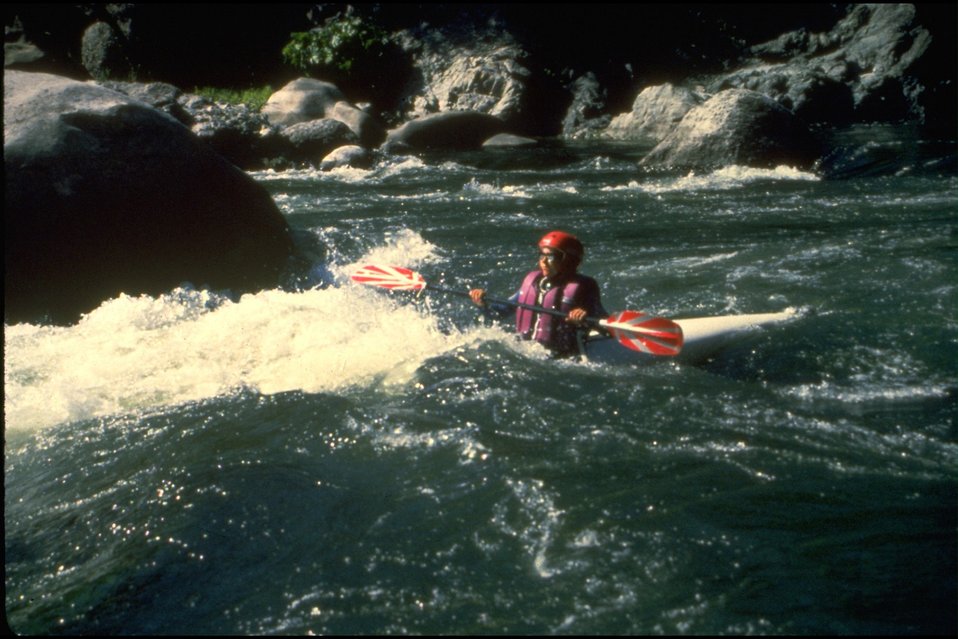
Rogue River - wild section.